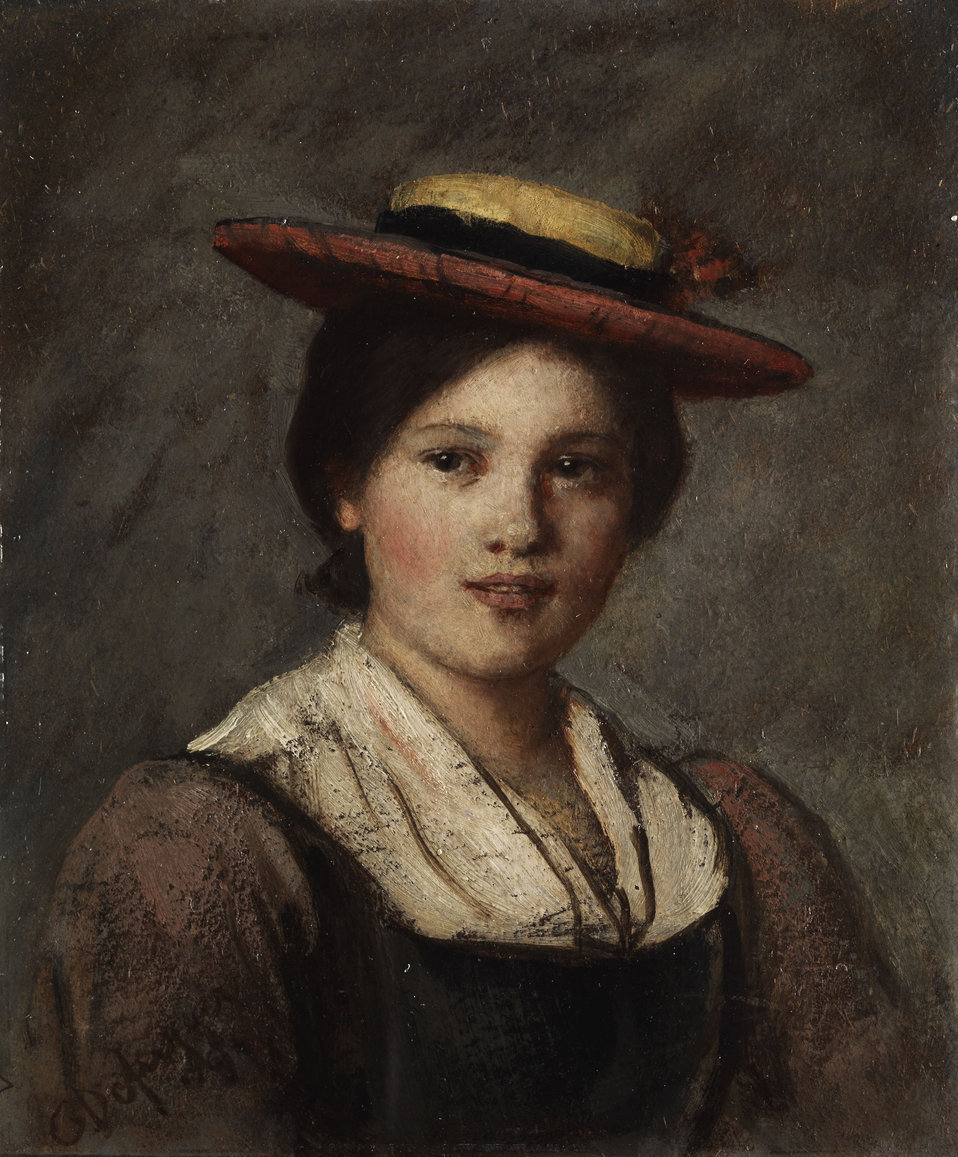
Deutsch: Tiroler Dirndl mit Strohhut. Öl auf Karton. 24 x 20,5 cm. Links unten signiert.